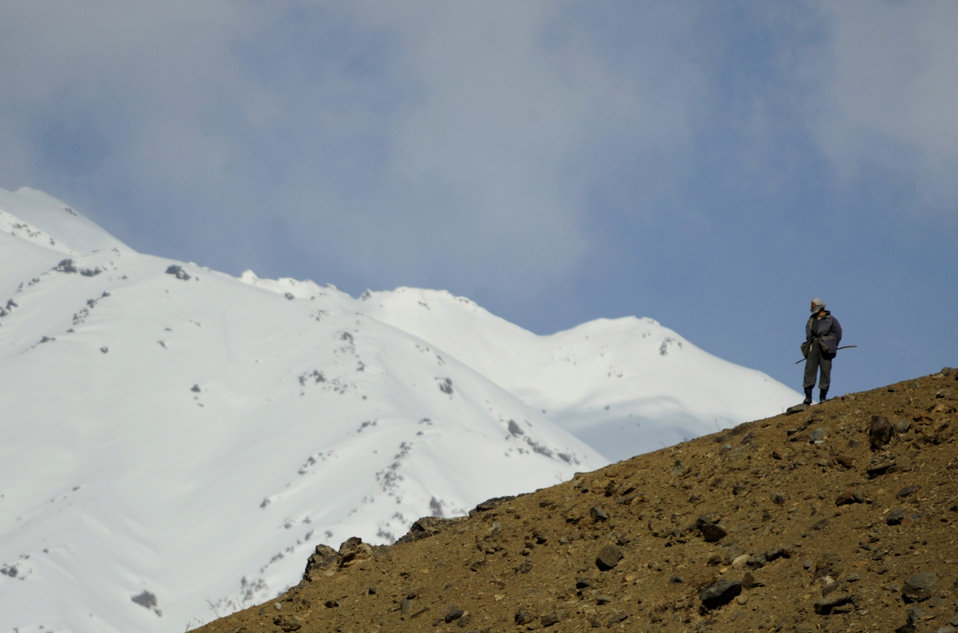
Panjshir Provincial Reconstruction Team

A mujahadeen guard provides security for American servicemembers of the Afghanistan Panjshir Provincial Reconstruction Team during a March 5 site visit in Afghanistan. Local mujahadeen provide the majority of the security for the PRT while in the Panjshir Valley.